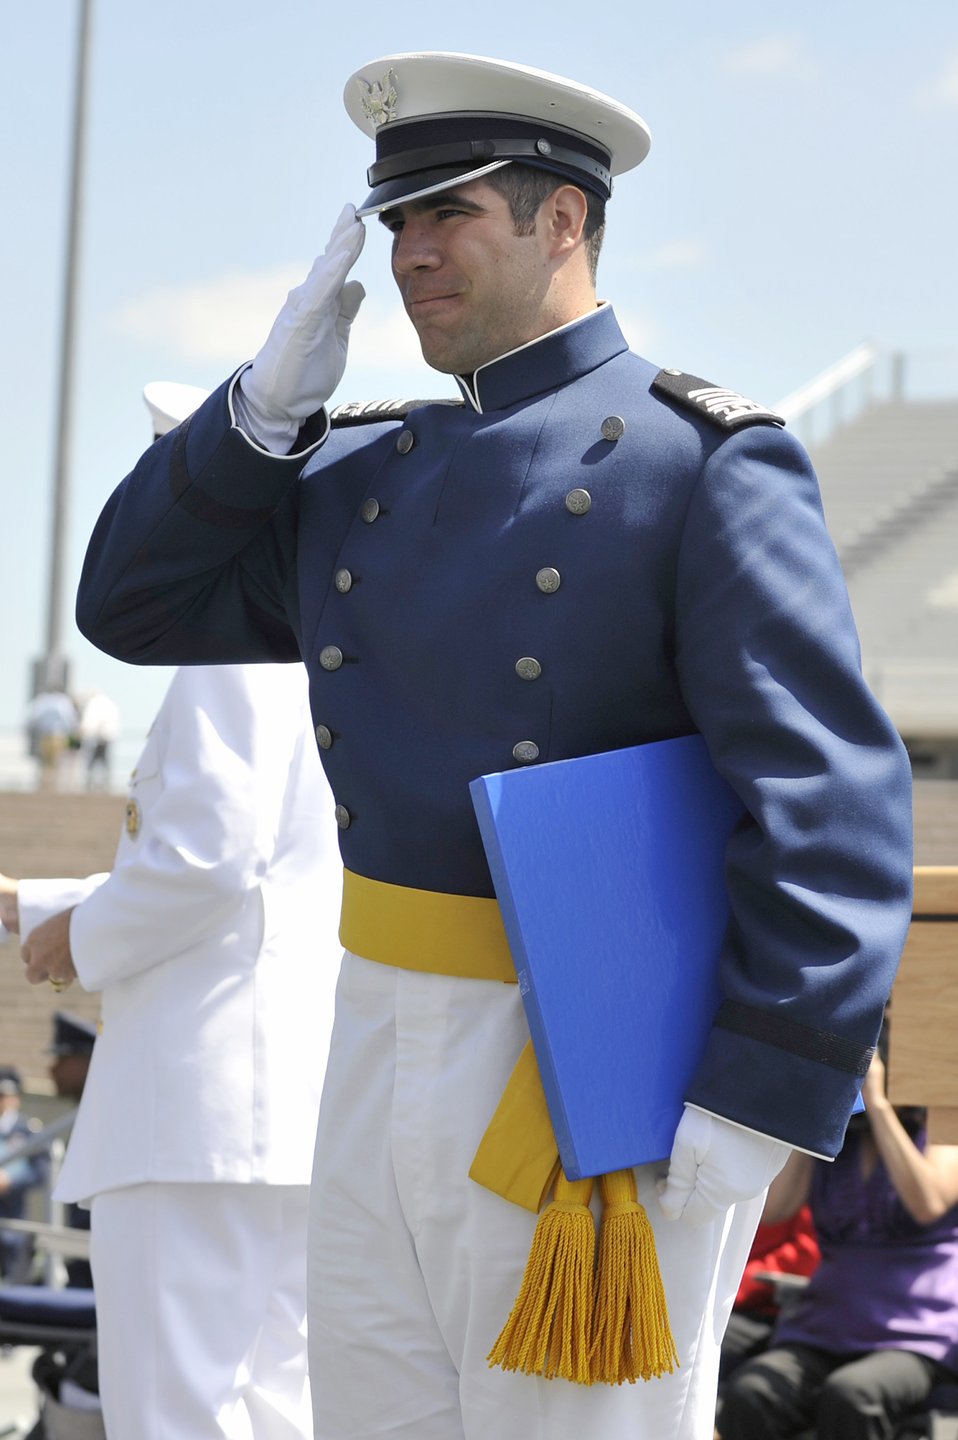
Joint Chiefs chairman delivers Academy commencement

Cadet 1st Class Nicholas Charles salutes after receiving his diploma during the graduation ceremony May 26, 2010, at the U.S. Air Force Academy, Colo. Cadet Charles was one of 1,001 cadets to receive their degrees and commissions as second lieutenants in the Air Force.